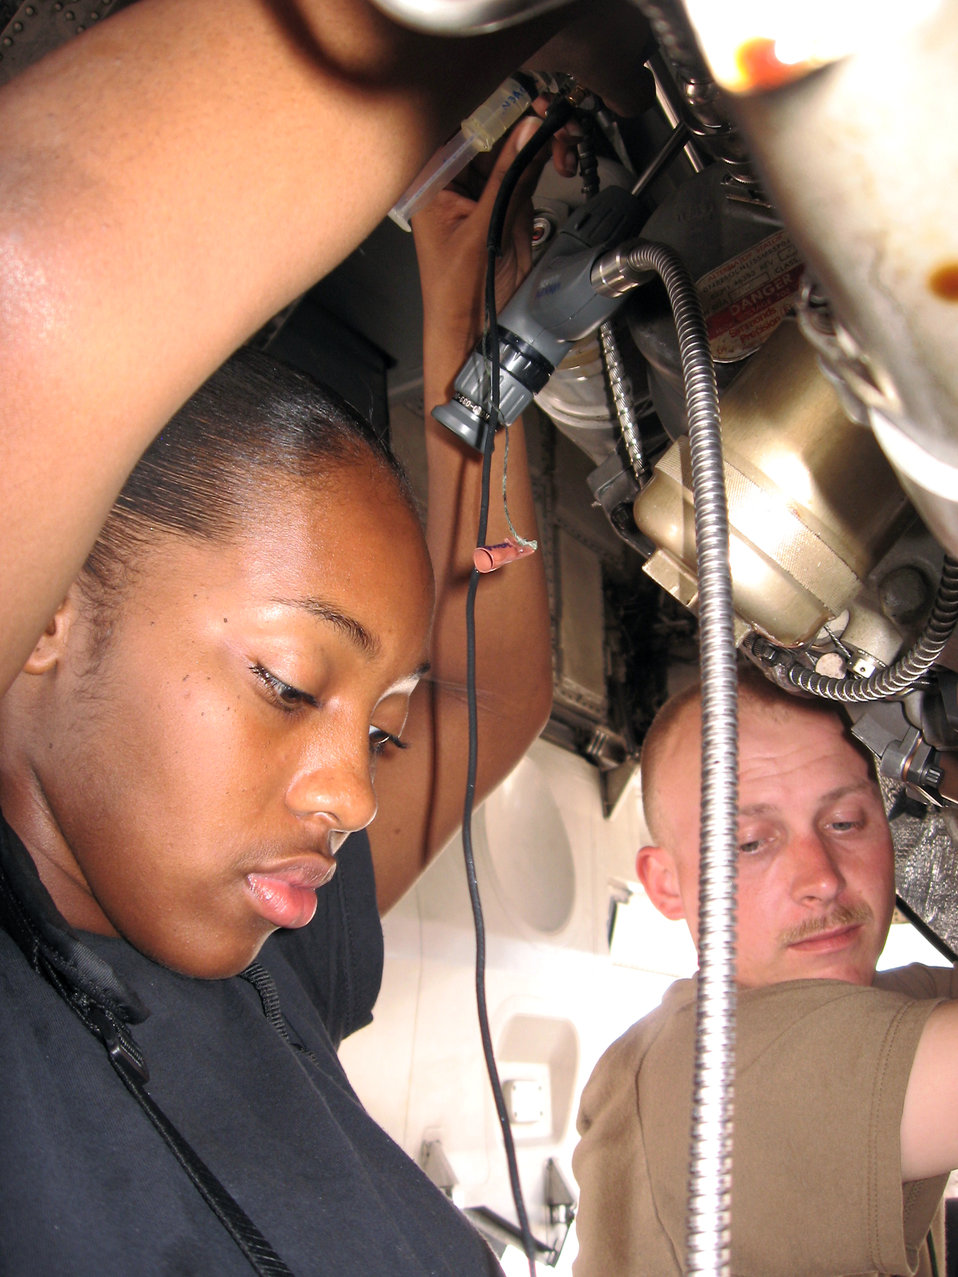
Operation Enduring Freedom

Airman 1st Class Claudia Carter (left) and Staff Sgt. James Stark (right), both from the 40th Expeditionary Maintenance Squadron, perform a 200-hour engine inspection on a B-1B Lancer. Both Airmen are deployed from Dyess Air Force Base, Texas.